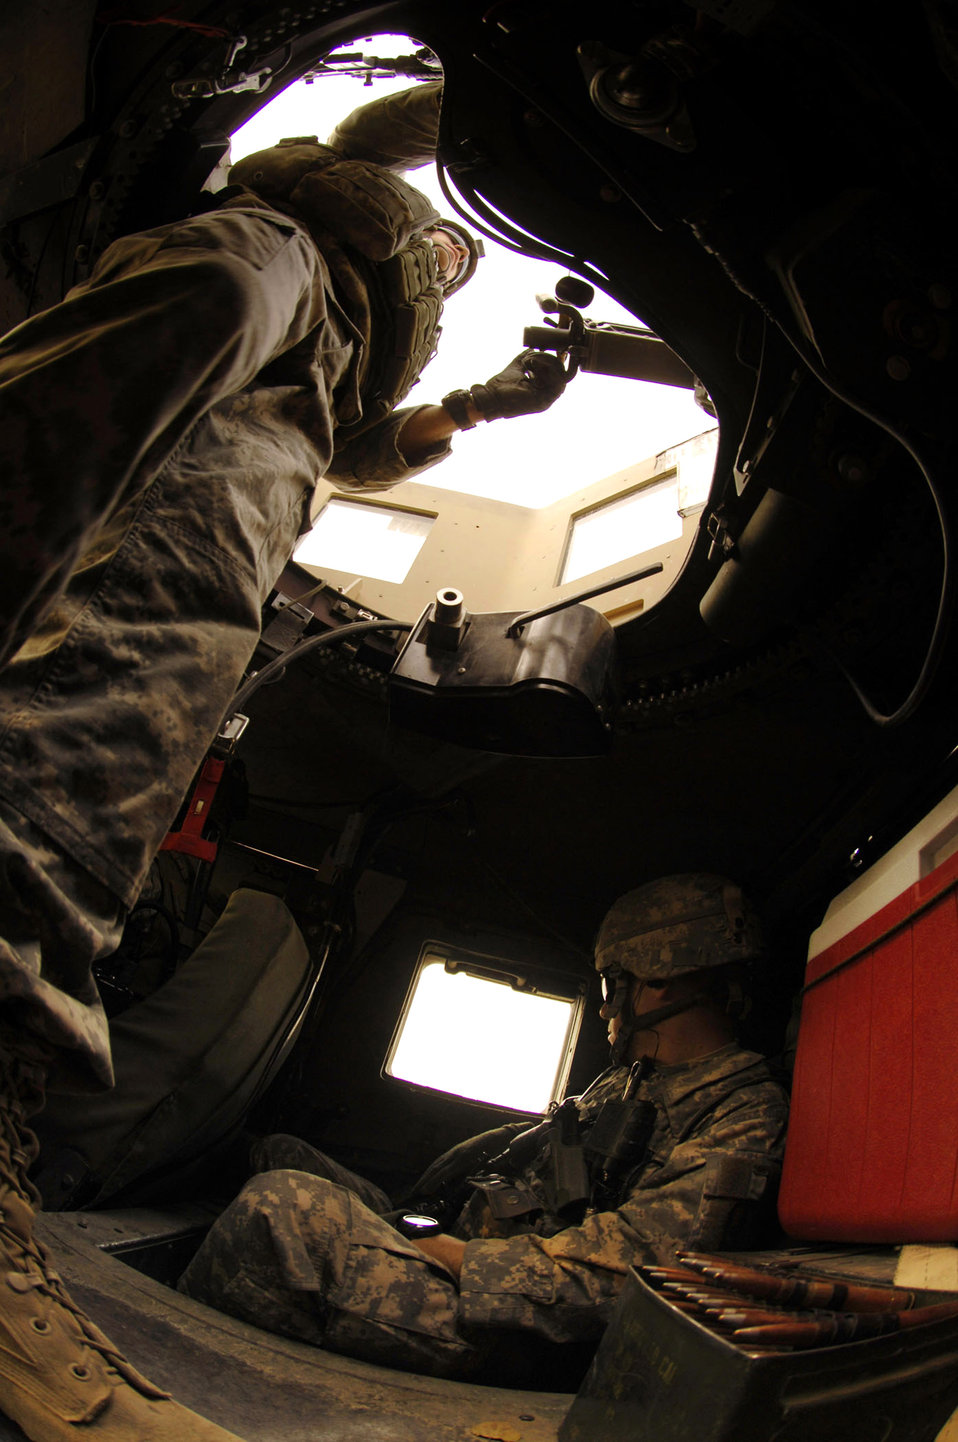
Reconstruction team aids Afghan communities

Members of the Nangarhar Provincial Reconstruction Team travel by Humvee on a canal assessment mission Nov. 10 in Afghanistan. The PRT assesses community needs and then builds schools, government centers, roads, medical capabilities and basic infrastructure throughout Nangarhar; they also personally mentor Afghan government officials and security forces to provide the Afghan people with the state representation and security they need.